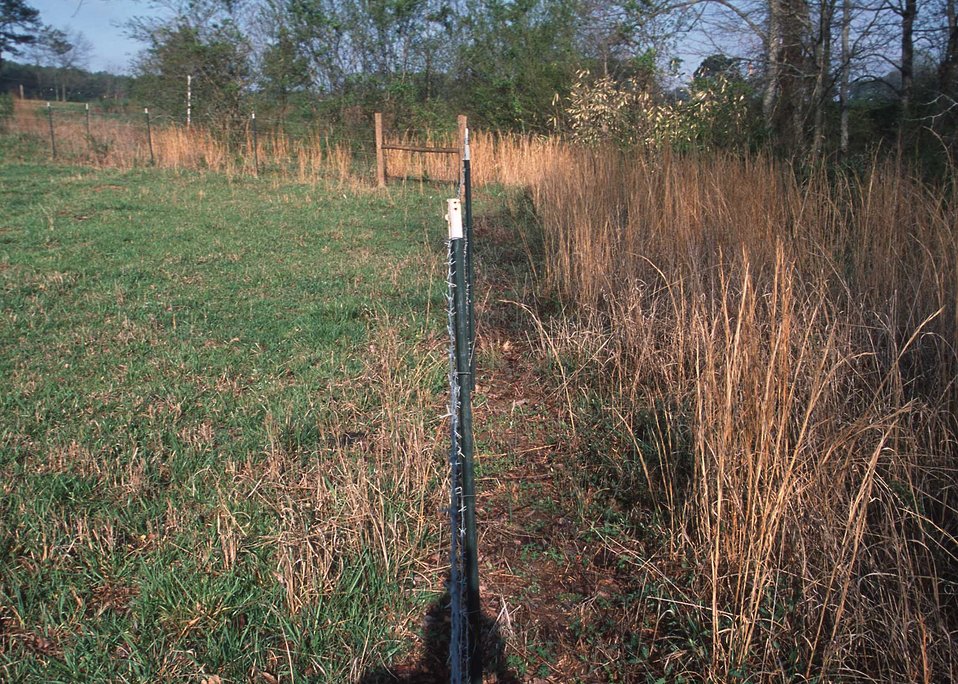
A barbed wire fence separates a riparian buffer (right) from a grazed pasture (left) used by cattle.